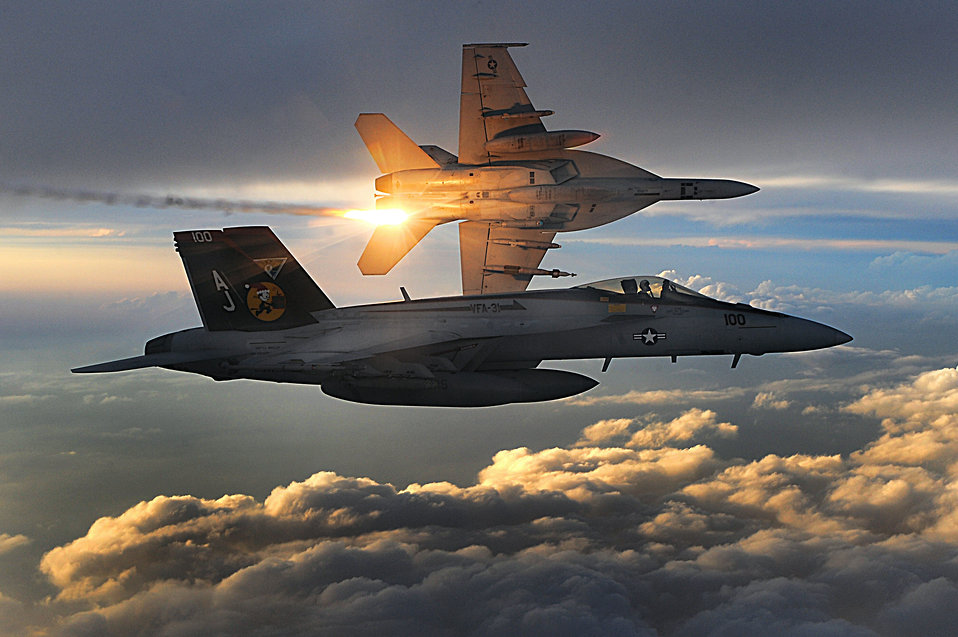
JTACs keep pilots on target to minimize collateral damage

U.S. Navy F/A-18 Super Hornets deploy heat flares during a combat patrol over Afghanistan Dec. 15. Trust between joint terminal attack controllers and pilots serves as an important aspect of close-air support.